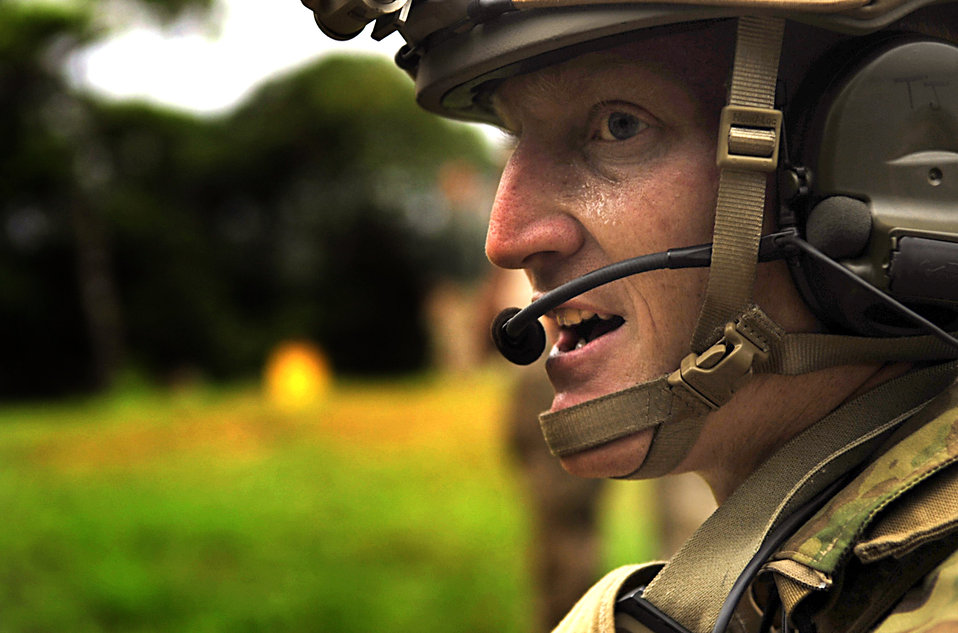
Airmen learn essential skills during joint combat training exercise

Capt. Timothy James yells for cover during a joint training exercise July 28, 2010, at Kadena Air Base, Japan. Capt. James is a combat rescue officer from the 31st Rescue Squadron.